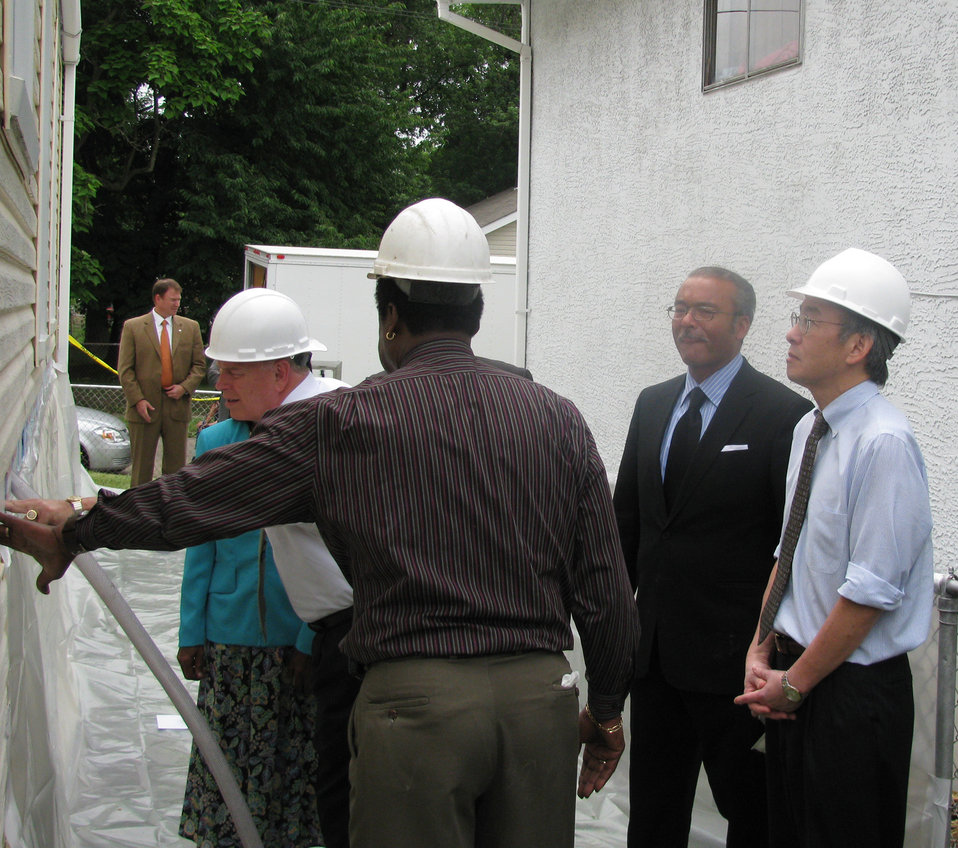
Ohio2